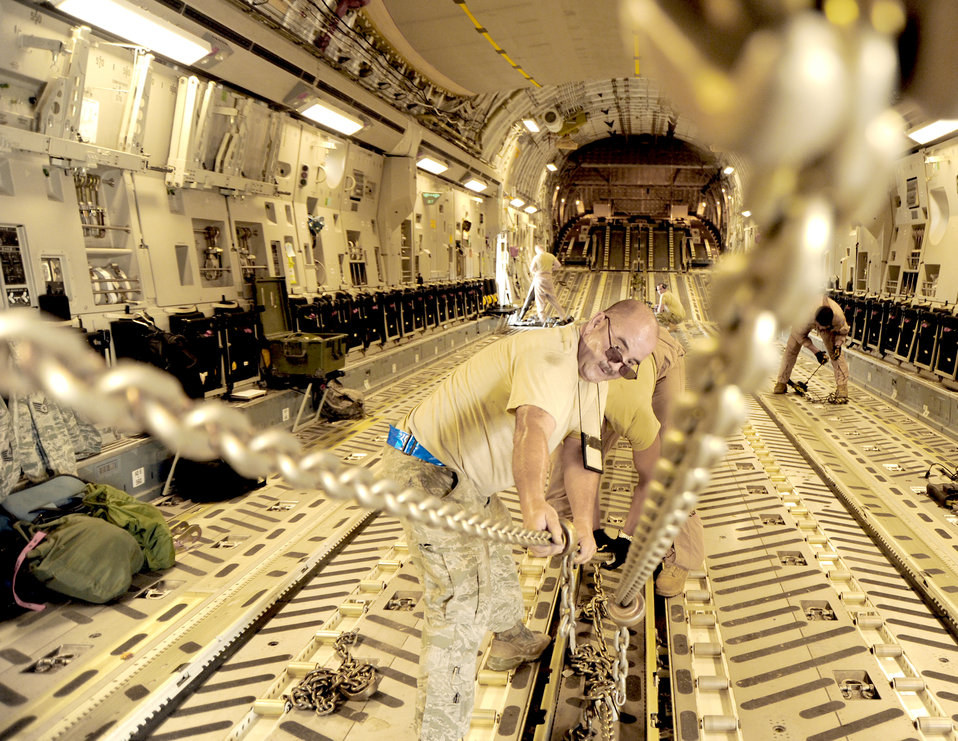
Operation Everest

Tech. Sgt. Jose Gonzalez assists in preparing a C-17 Globemaster III before an airdrop mission Aug. 13, 2010, at an air base in Southwest Asia. Sergeant Gonzalez is with the 8th Expeditionary Air Mobility Squadron.